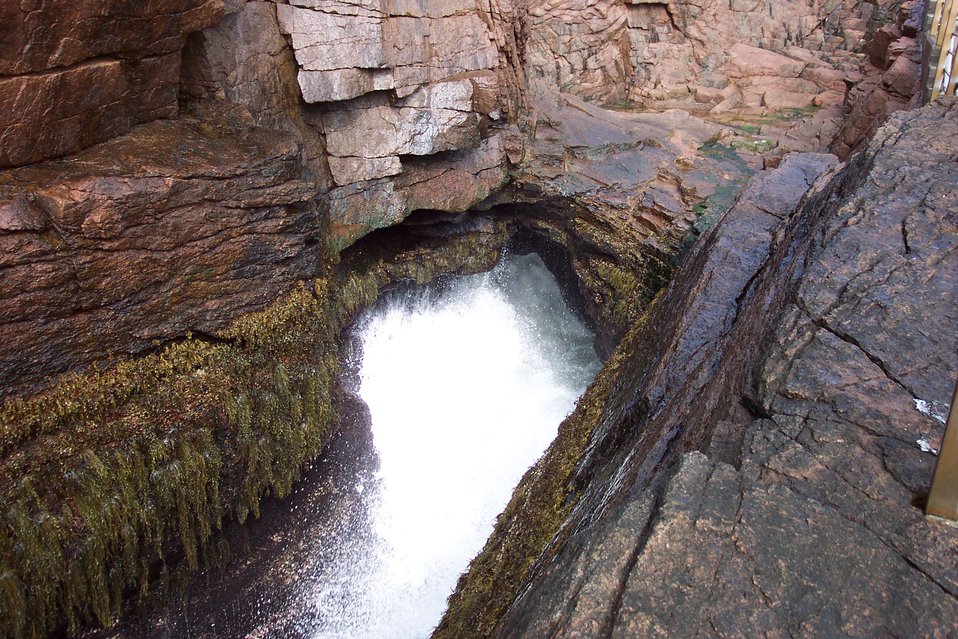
Thunder Hole - spray, water and thunderous sounds following the crash of a North Atlantic swell. Note the limit of algae growth along the high tide line on the rocks.